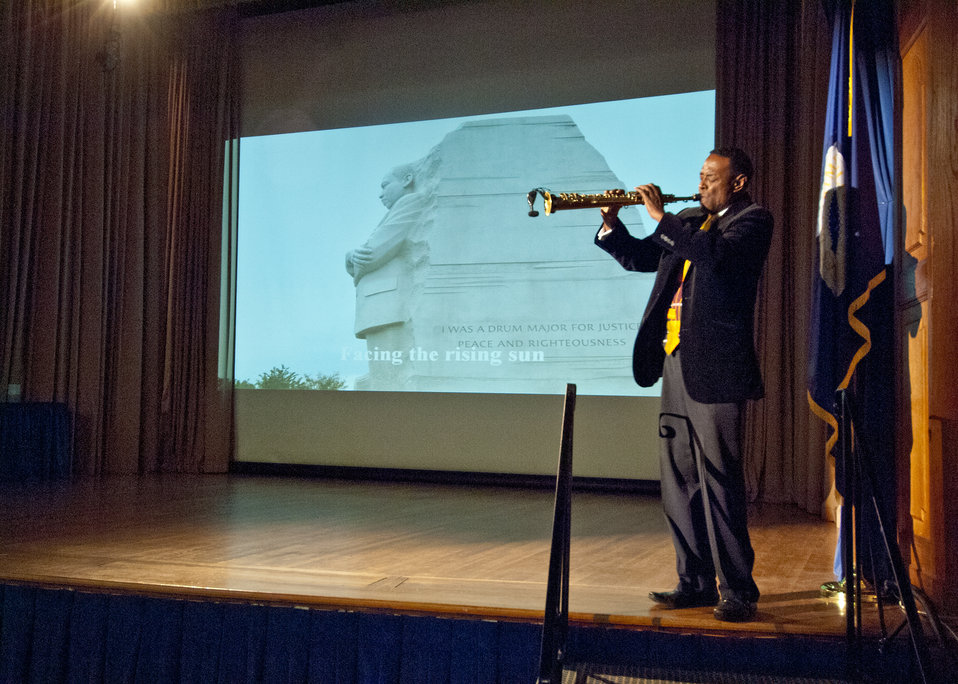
J. Plunky Branch of the Afro-Funk Jazz Group, “Plunky and Oneness” performs a saxophone solo of The Negro National Anthem at the National Service Day and Martin Luther King Celebration in honor of Dr. Martin Luther King Jr.’s contributions to the Civil Rights Movement at the United States Department of Agriculture in Washington, D.C., on Thursday, January 12, 2012.